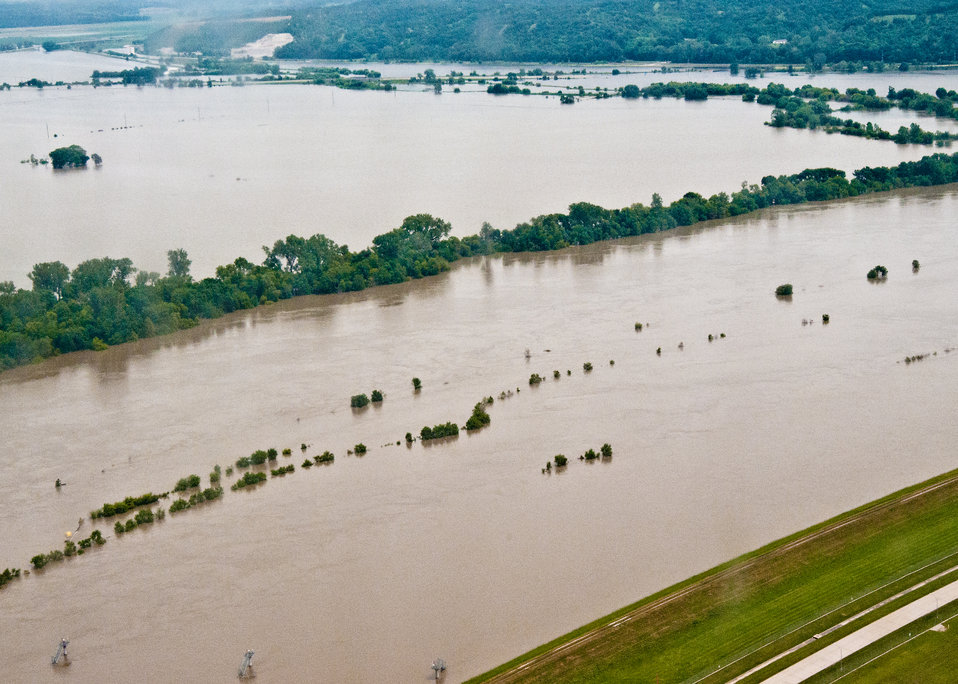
The Missouri river flooded hundreds of acres in Nebraska and Iowa. Agriculture Secretary Tom Vilsack visited the area on Friday, June 17, 2011, and spoke to agriculture producers and community leaders. The goal of the meetings was to get a firsthand look and provide that information back to Washington necessary to better deliver disaster programs expeditiously to effectively respond to this disaster. The United States Department of Agriculture agencies have programs to assist producers as they assess recovery efforts to assist with recovery in rural areas reeling from a natural disaster. USDA and the entire federal family have been working with state and local officials to provide relief to residents, farmers, ranchers and businesses.